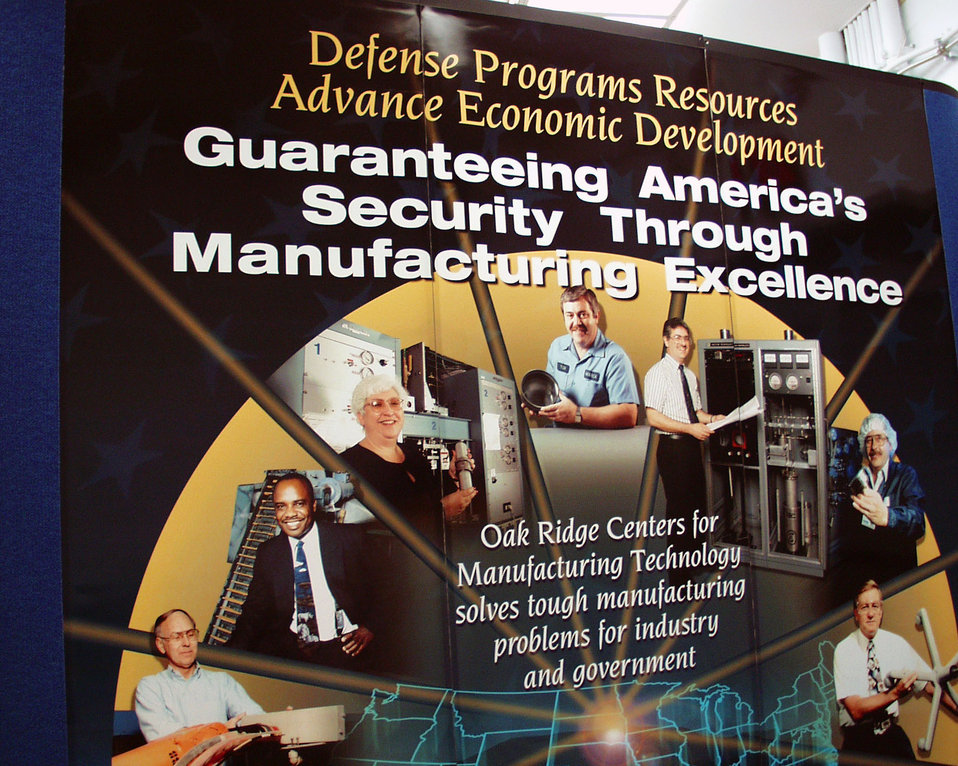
Y-12 poster Oak Ridge

00-0015-05 DOE photo by Lynn Freeny

Y-12 poster Oak Ridge Tennessee Feb. 2000